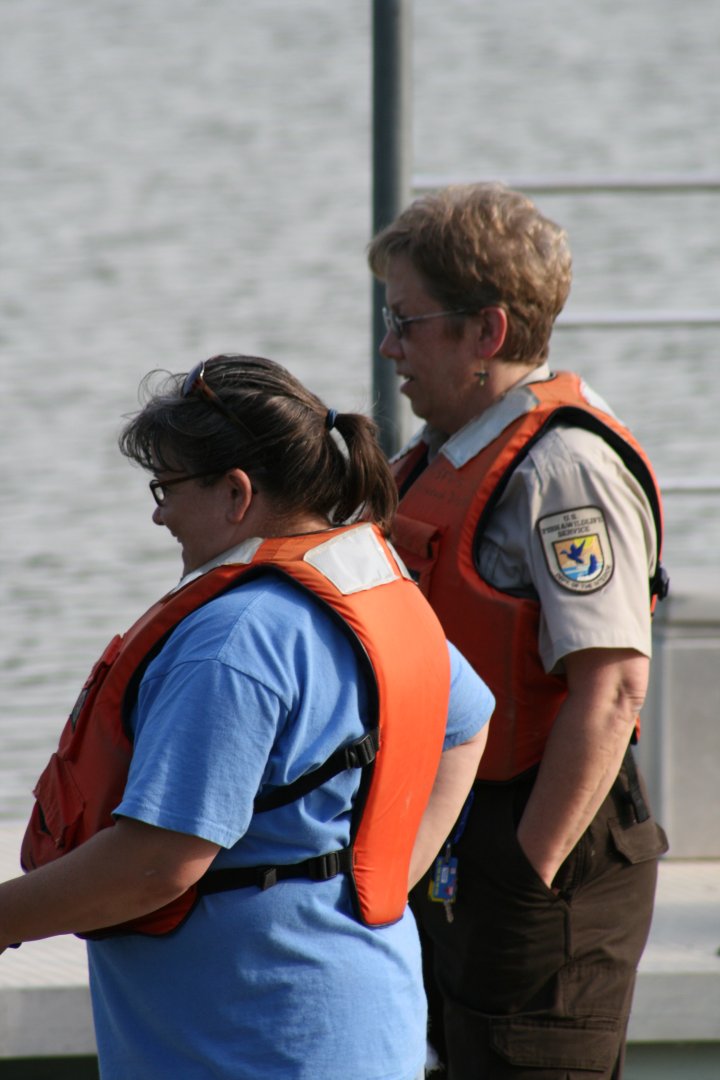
AT Maule assists a Project Compass client (1)

Administrative Technician Gayle Maule assists a Project COMPASS client with fishing.